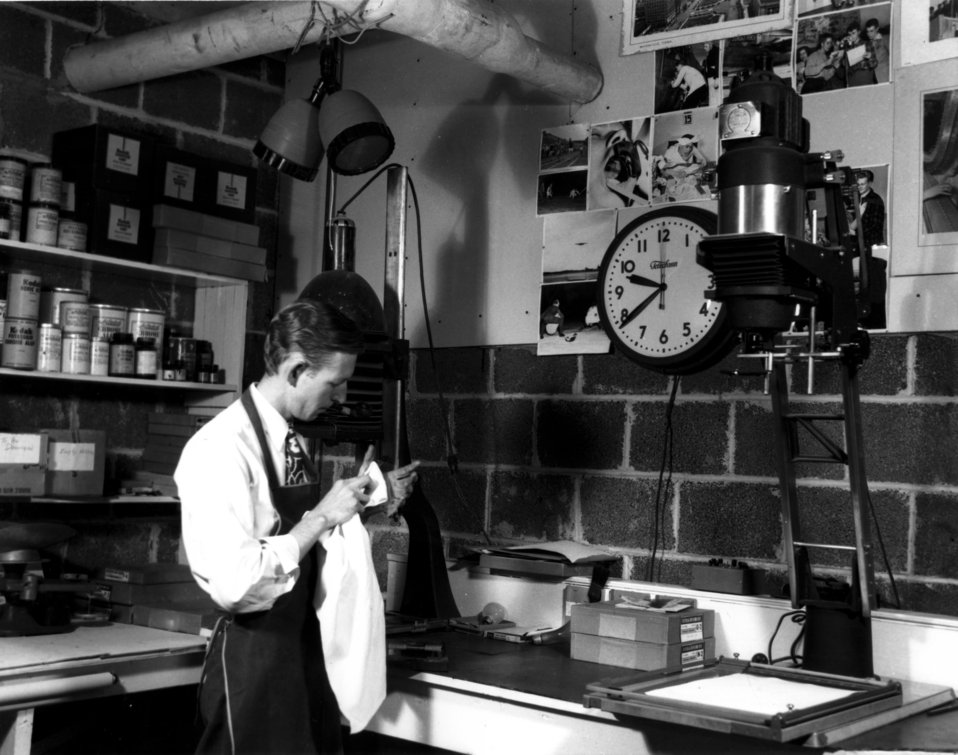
Daily Life at Oak Ridge